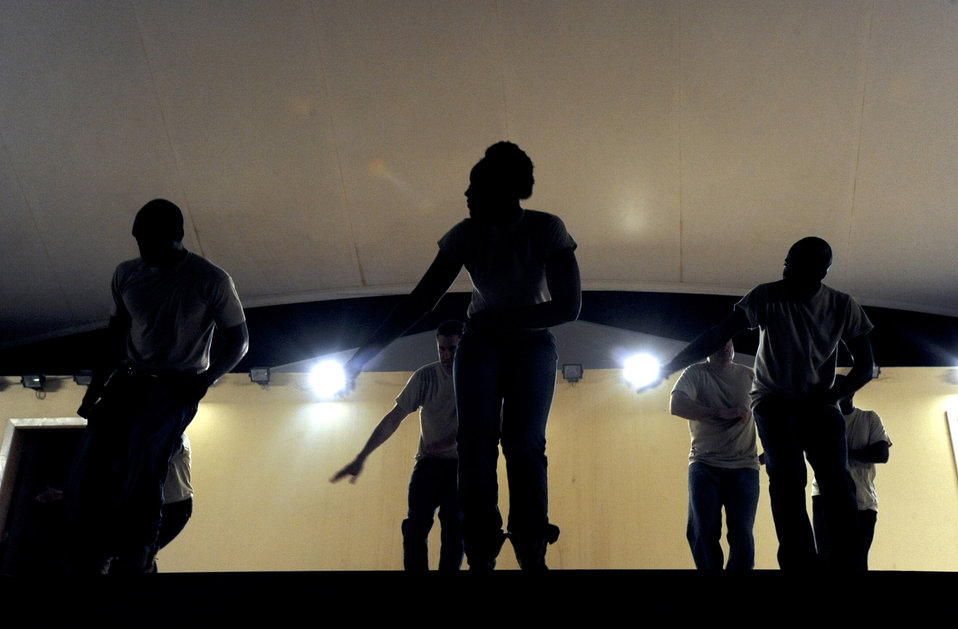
Step it up

Members of a base Step team perform a Step routine during a special edition Karaoke Review in celebration of African American History month in Southwest Asia Feb. 15. The team comprised of various coalition servicemembers performed several step-dance routines. This version of step-dancing or